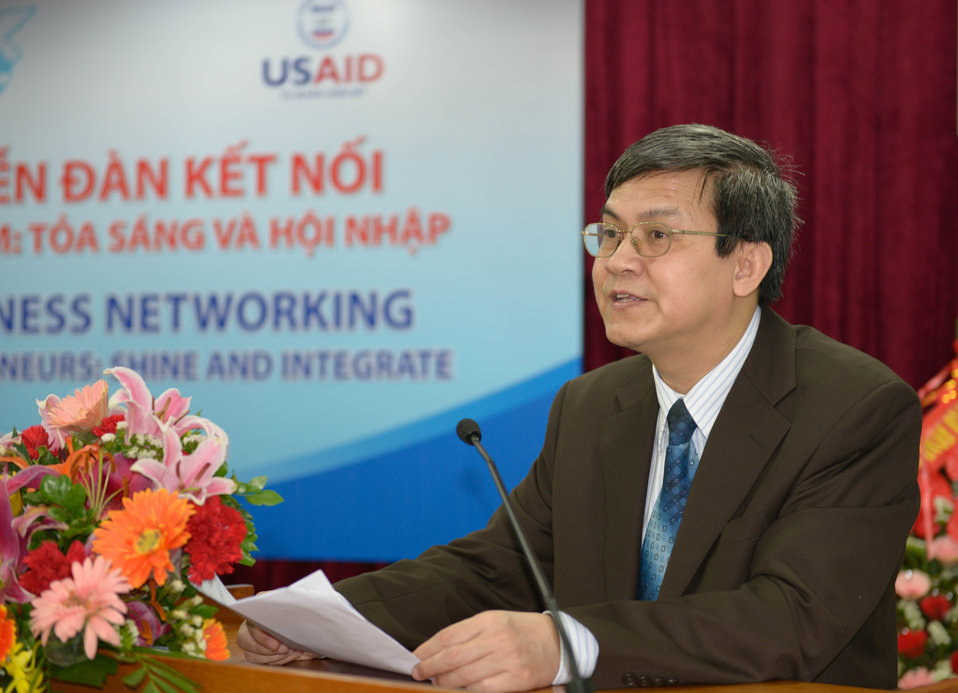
Vice Chairman of Phu Tho People's Committee, Nguyen Dinh Cuc, speaks at the seminar for female entrepreneurs.

Phu Tho, Vietnam. March 1, 2014.